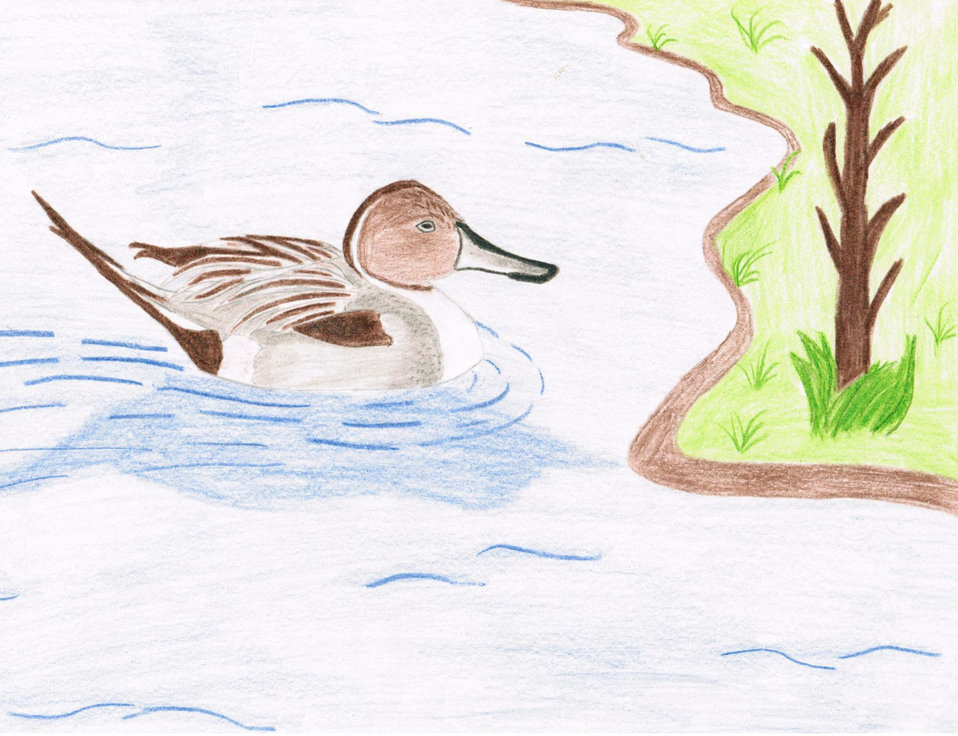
PuertoRico

2012 Jr Duck Stamp Program
Territory Best of Show
Puerto Rico